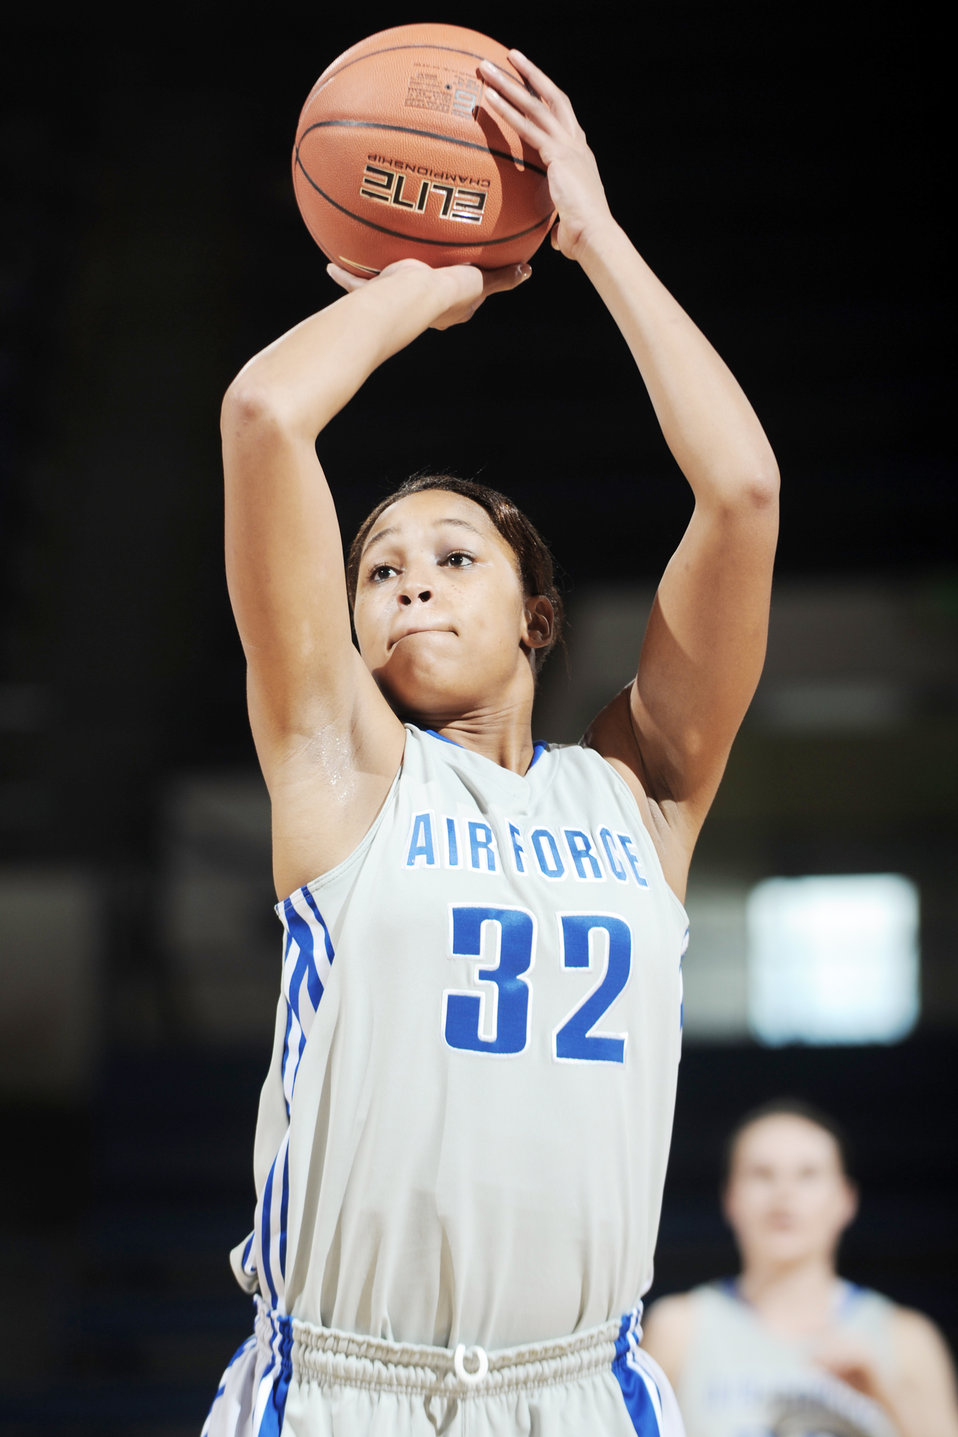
Women's basketball: Bradley University runs past Air Force

Academy freshman forward Dymond James takes a free throw after being fouled during the Falcons game against Bradley University at the Academy's Clune Arena Dec. 19, 2009. Air Force lost the game to the Braves, 62-45.